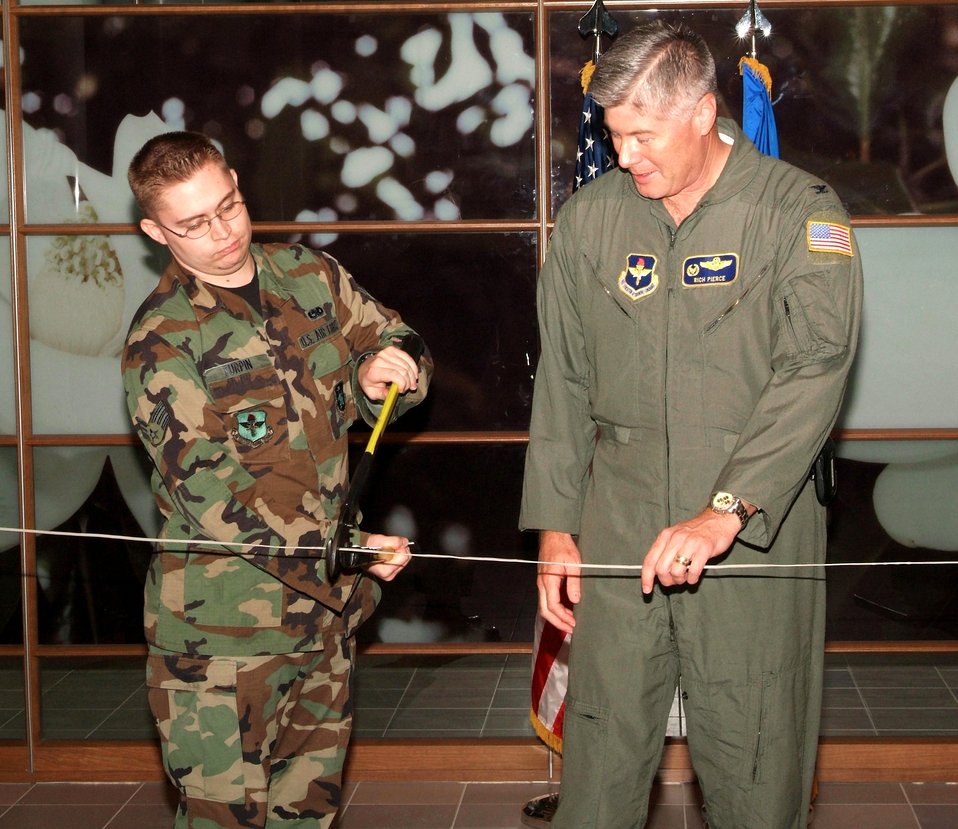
Keesler, industry set new Air Force standard for telephone service

Senior Airman Joseph Turpin cuts a live phone cable Nov. 15 with the help of Col. Richard Pierce as part of the dedication ceremony demonstrating Keesler Medical Center's new Voice Over Internet Protocol phone system, which uses the Internet instead of phone lines to connect telephone signals. Colonel Pierce is vice commander of the 81st Training Wing at Keesler Air Force Base, Miss. Airman Turpin is assigned to the 81st Communications Squadron.